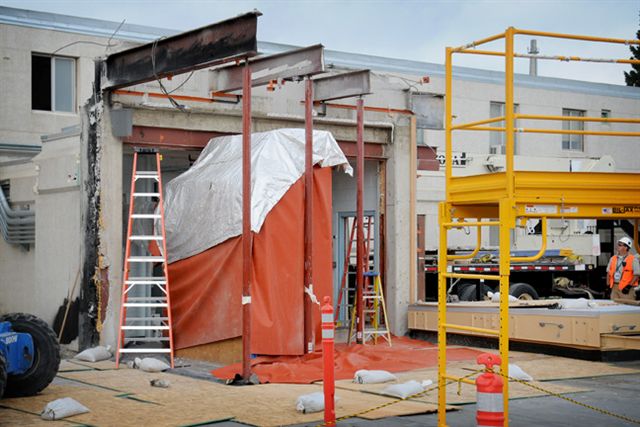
RAT DD RTCD S60 602ENTRY 072610 P6555-24 A